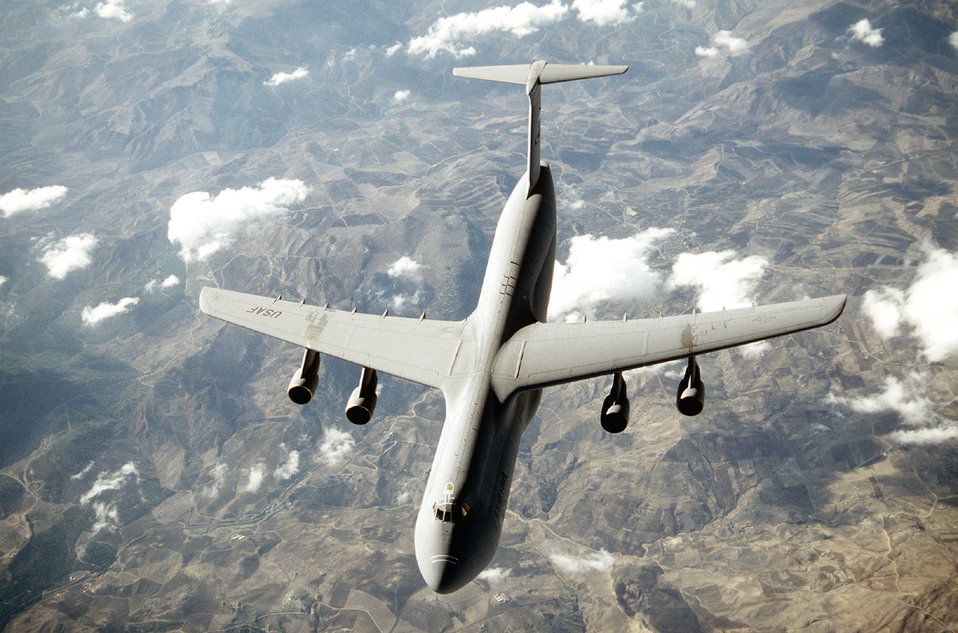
C-5 Galaxy

FILE PHOTO -- With its tremendous payload capability, the C-5 Galaxy, an outsized-cargo transport, provides the Air Mobility Command intertheater airlift in support of United States national defense. The C-5 is one of the largest aircraft in the world. It can carry outsized cargo intercontinental ranges and can take off or land in relatively short distances. Ground crews can load and off load the C-5 simultaneously at the front and rear cargo openings since the nose and aft doors open the full width and height of the cargo compartment. It can also